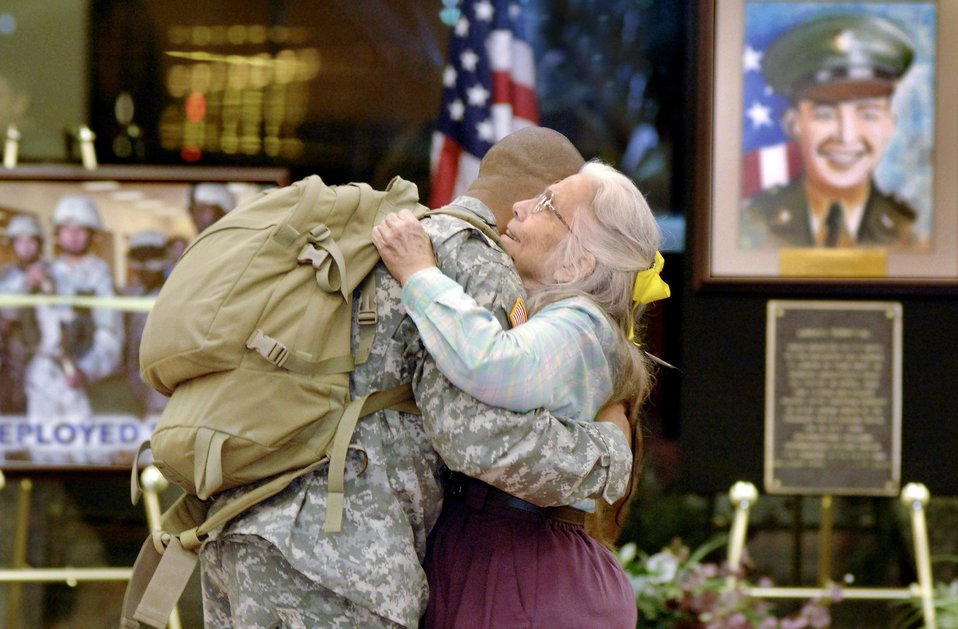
Airmen deployed with Army return home

Elizabeth Laird, a Salvation Army volunteer, gives Capt. Adrian Williams a hug following his return from a six-month deployment to Iraq June 5 at Fort Hood, Texas. Ms. Laird has been giving Soldiers and Airmen departing and returning to Fort Hood hugs for more than four years.